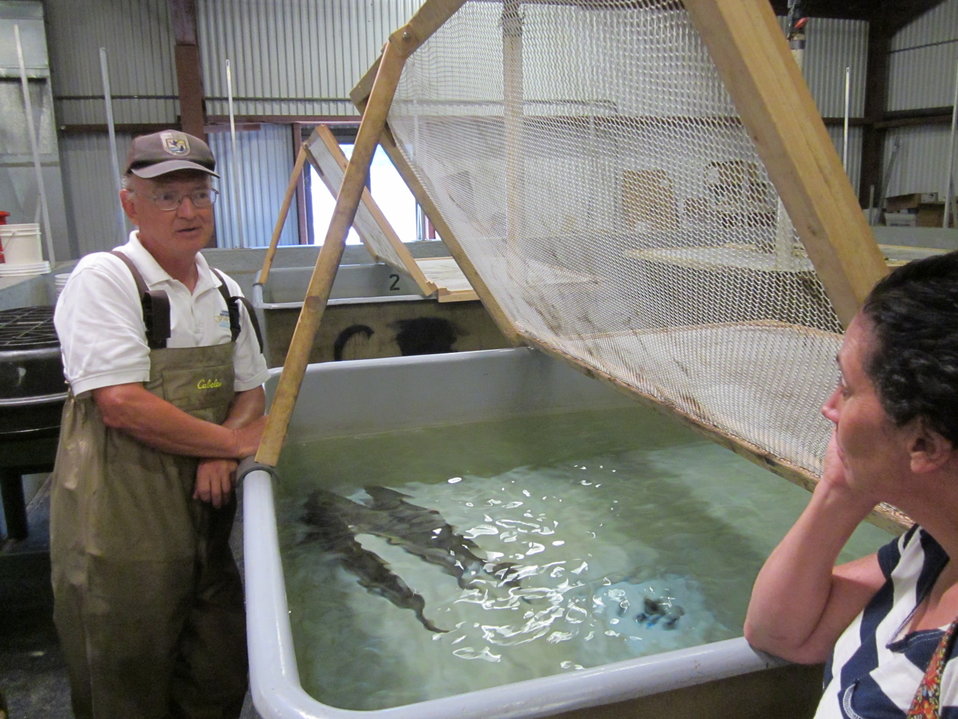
Chat over salmon

Sunderland, MA , July 24, 2012: Richard Cronin National Salmon Station Manager Micky Novak shows Boston Globe photographer Joanne Rathe a tank with Atlantic Salmon recently brought to the hatchery. Rathe was on site to do a story about the announcement that the U.S. Fish and Wildlife Service would discontinue rearing Atlantic Salmon to restore the species to the Connecticut River.